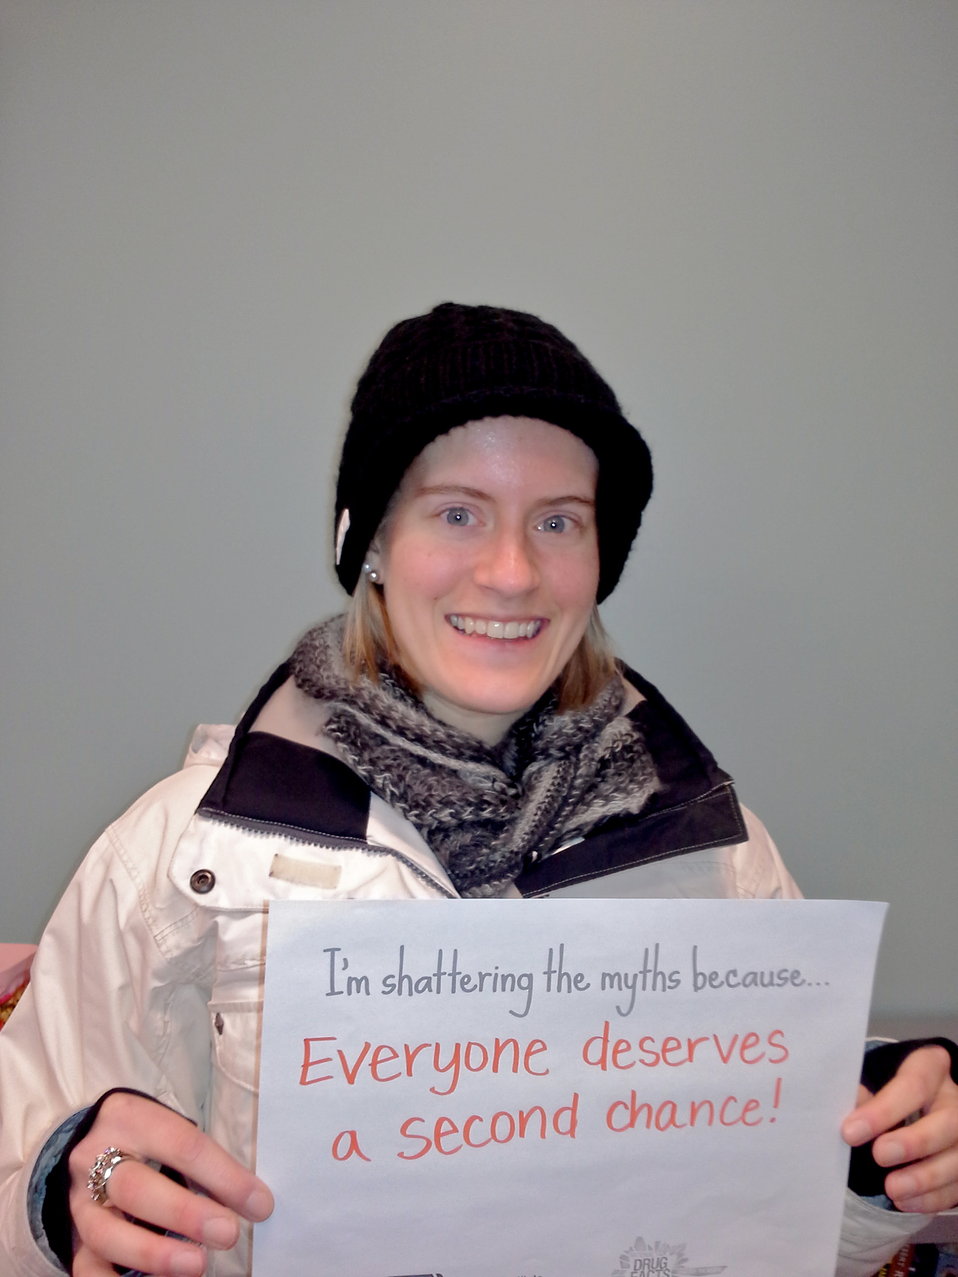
Shattering the Myths campaign in Winona, Minnesota